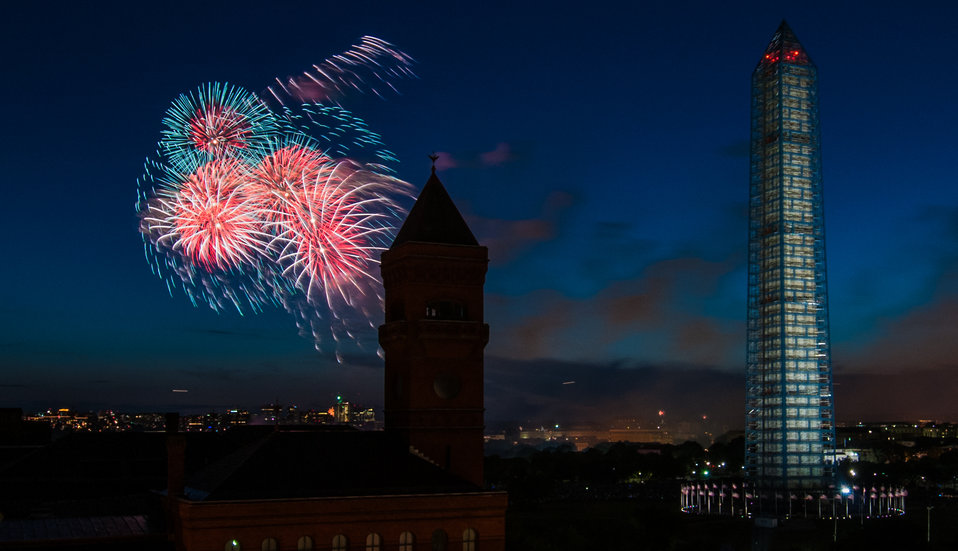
4th of July fireworks as seen from the U.S. Department of Agriculture (USDA) headquarters building, with the USDA Forest Service Yates Building in the foreground, left, and the Washington Monument in Washington, D.C., on July 4, 2013.